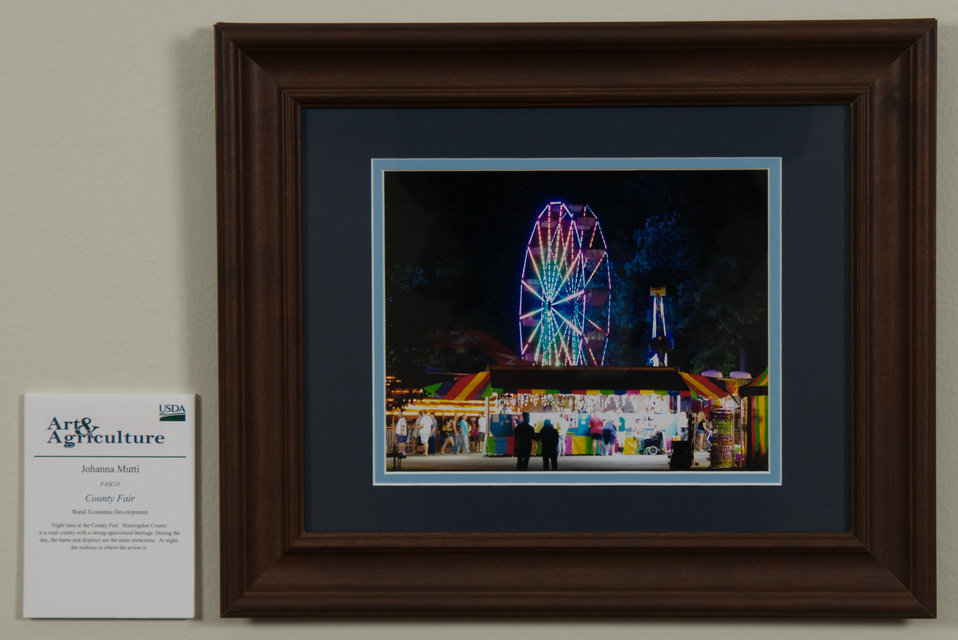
Online Viewer's Choice entries of the 2013 Art & Agriculture, Tuesday, July 9, 2013, in the South Building, Washington, D.C. Themes were expressed by employees from across the department and the contest was open to full-time and part-time USDA employees. Winning artwork will be displayed till the end of the year. U.S. Artistic expression is a creative outlet that is vital for an individual to grow and develop.